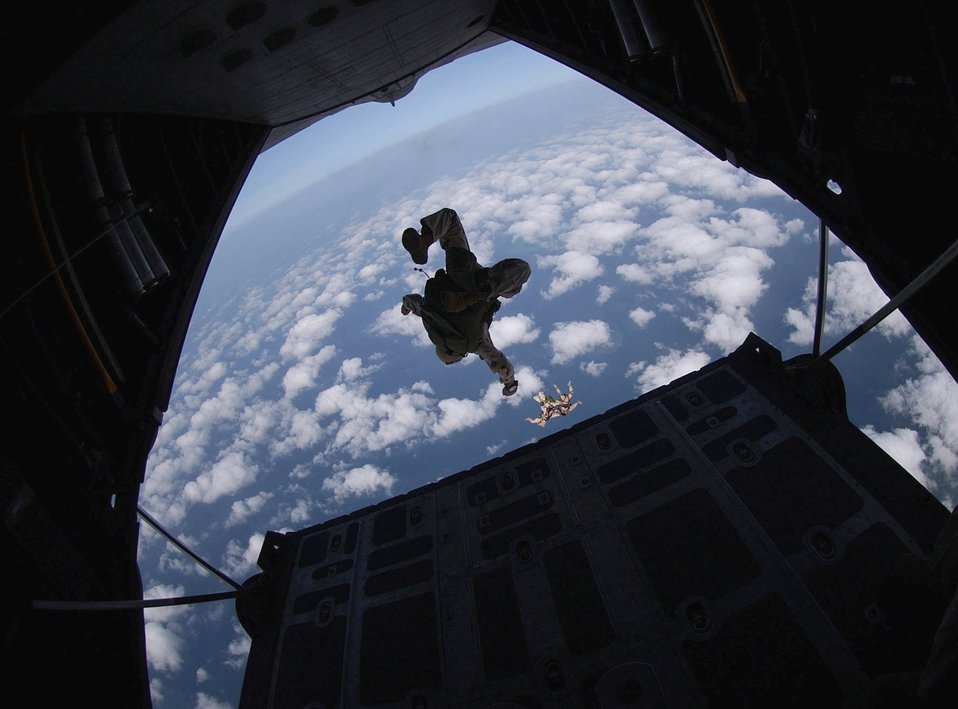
Giant leap

Airmen with the 304th Expeditionary Rescue Squadron jump out of an HC-130 Hercules operated by the 71st ERQS over the Gulf of Tadjoura, Djibouti, on Tuesday, March 28, 2006. The 304th is based in Portland, Ore., and the 71st is from Valdosta, Ga.